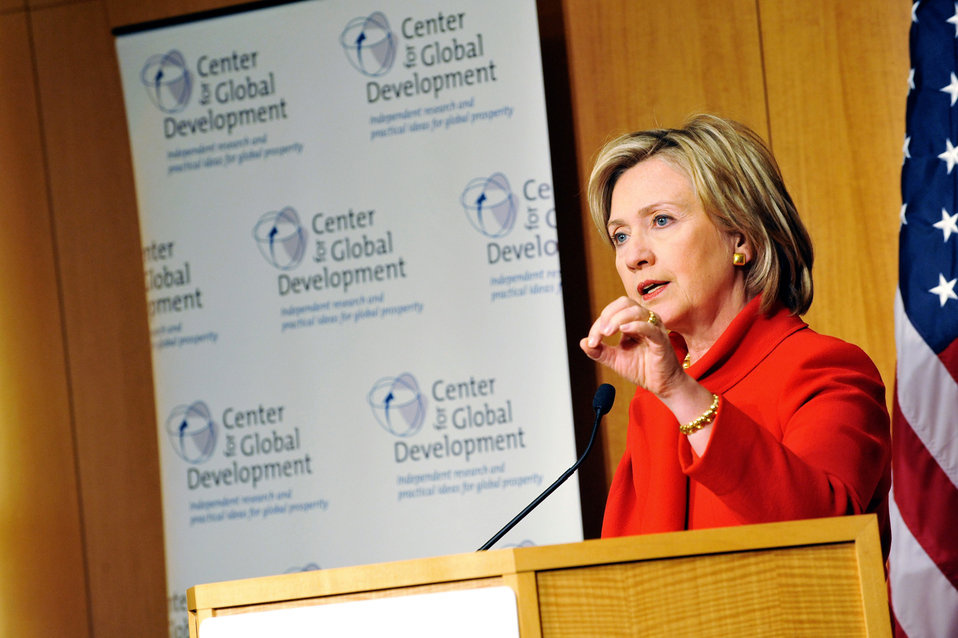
Secretary Clinton: Development in the 21st Century

U.S. Secretary of State Hillary Rodham Clinton provides remarks on 'Development in the 21st Century' at the Center for Global Development in Washington, DC January 6, 2010.